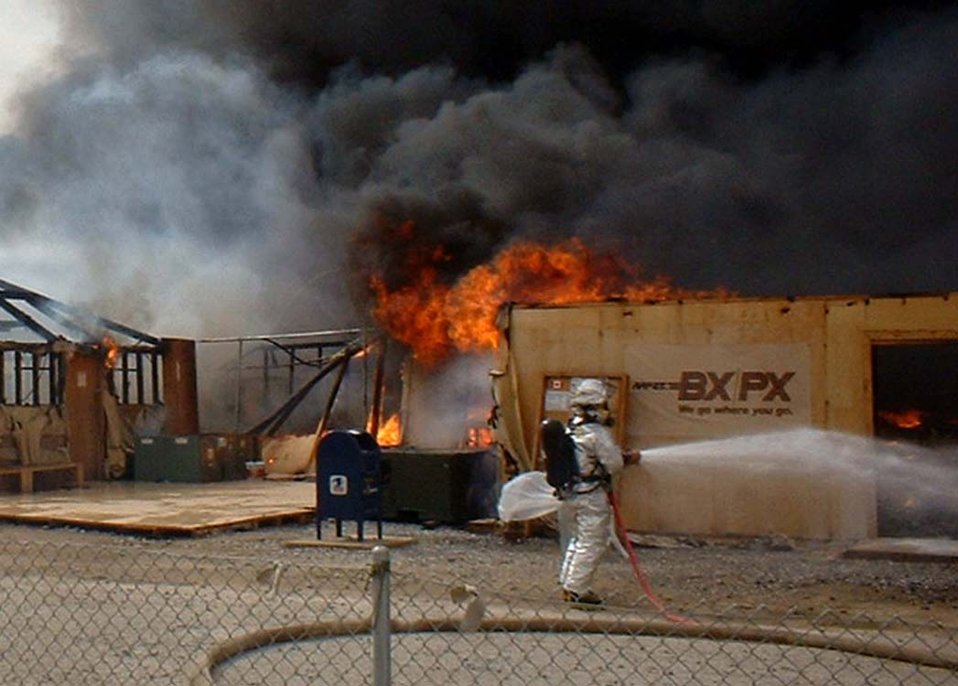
Exchange reopens days after destructive fire

KANDAHAR, Afghanistan -- Air Force firefighters battle a blaze Feb. 21 that destroyed the exchange, barbershop, gift and coffee shop at Kandahar, Afghanistan. The blaze also destroyed the personal living quarters of 25 Army and Air Force Exchange Service employees. Damage costs are estimated at more than $1 million.